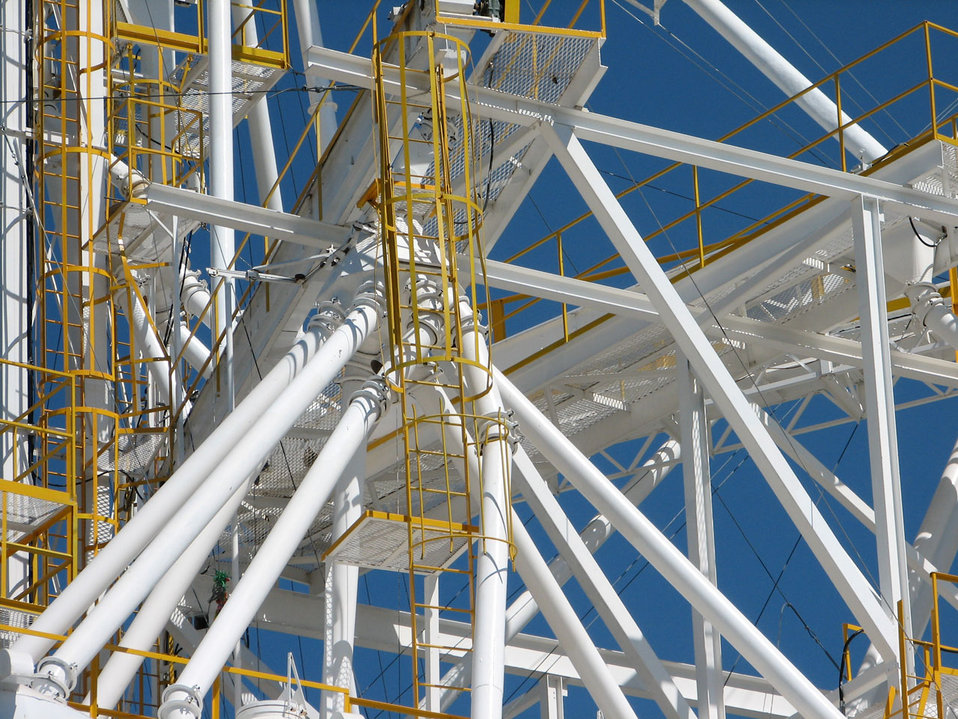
Building structure series

Another view of this building structure great texture image.